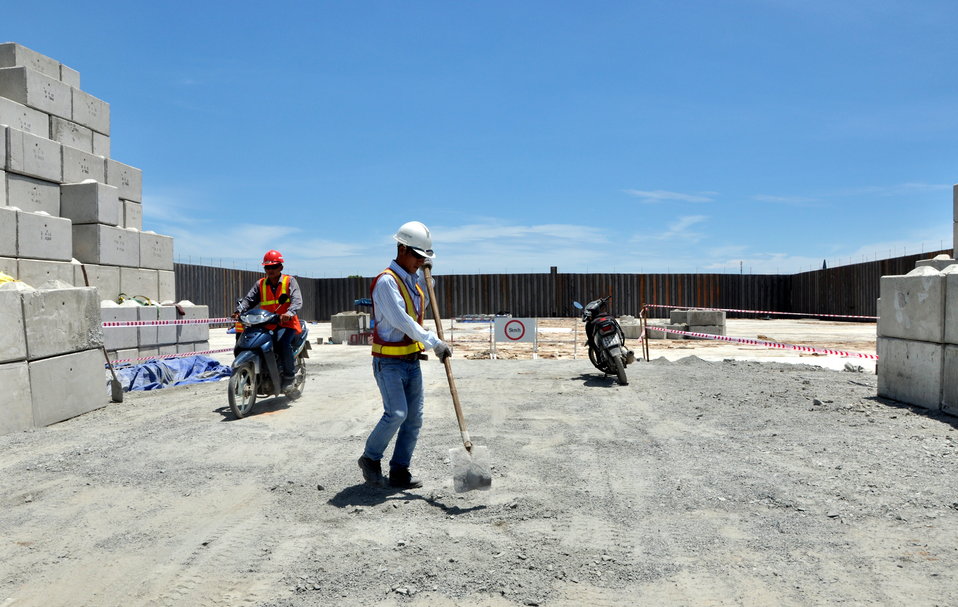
Environmental Remediation Progress at the Danang Airport site

Progress at the Remediation of Dioxin Contamination Project Site

Danang, Vietnam, June 5, 2013